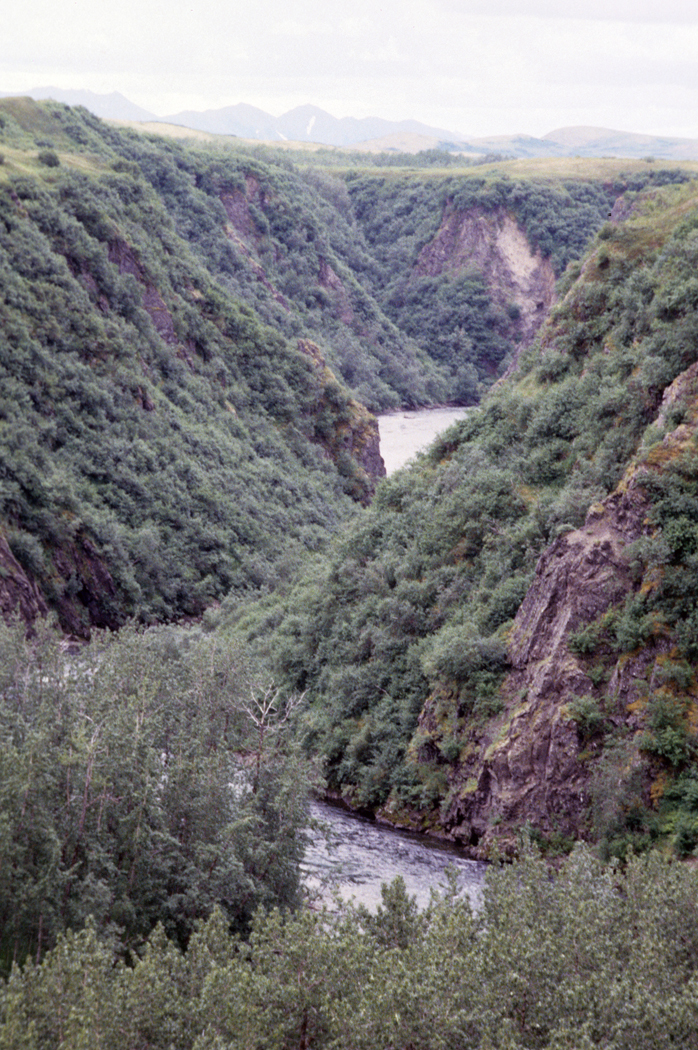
Kemuk River

View of the Kemuk River